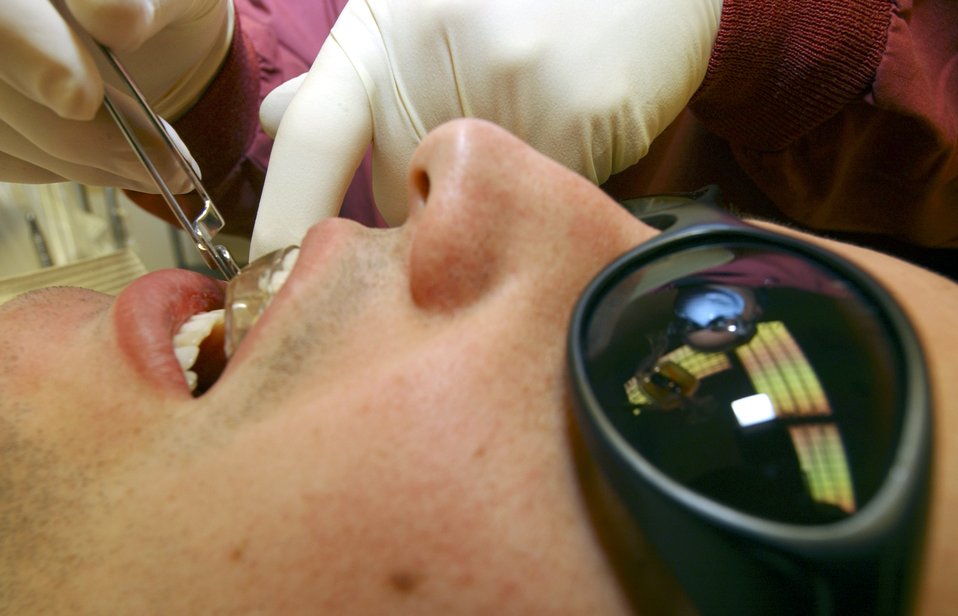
Say AHHH!!

ROYAL AIR FORCE LAKENHEATH, England -- Col. (Dr.) Robert Larsen adjusts Staff Sgt. Matthew Dalton's acrylic nightguard during a dental examination here April 27. Dr. Larsen is the chief general of dentistry assigned to the 48th Dental Squadron, and Sergeant Dalton is assigned to the 48th Aircraft Maintenance Squadron.